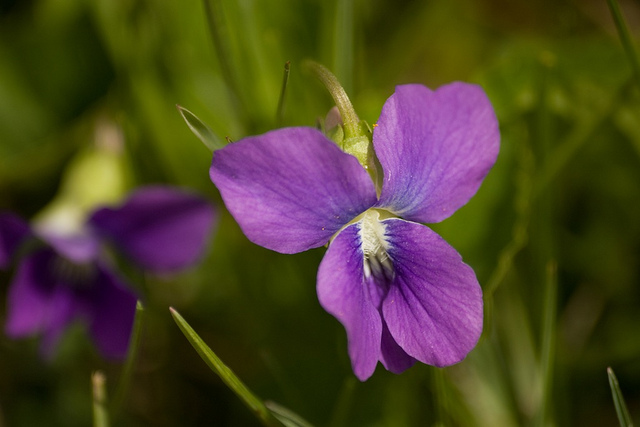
prairie violet

Neal Smith National Wildlife Refuge